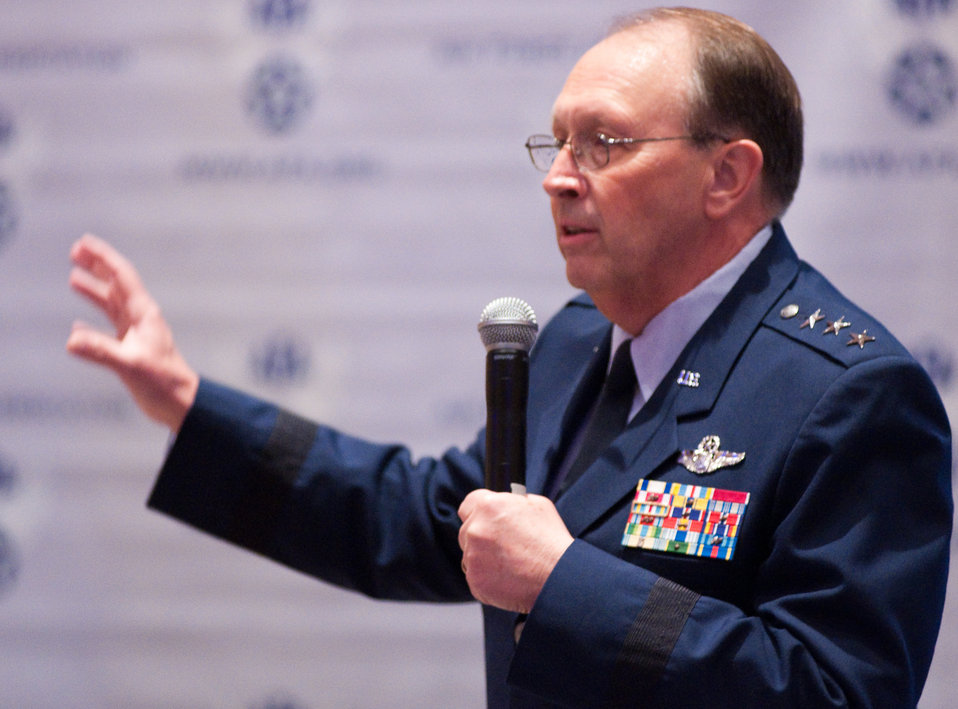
General Stenner at AFA

Lt. Gen. Charles E. Stenner Jr., the commander of the Air Force Reserve Command and chief of the Air Force Reserve, speaks to a standing-room only crowd about military structure for the 21st century Sept. 13, 2010, during the Air Force Association Air & Space Conference and Technology Exposition 2010 at National Harbor in Oxon Hill, Md.